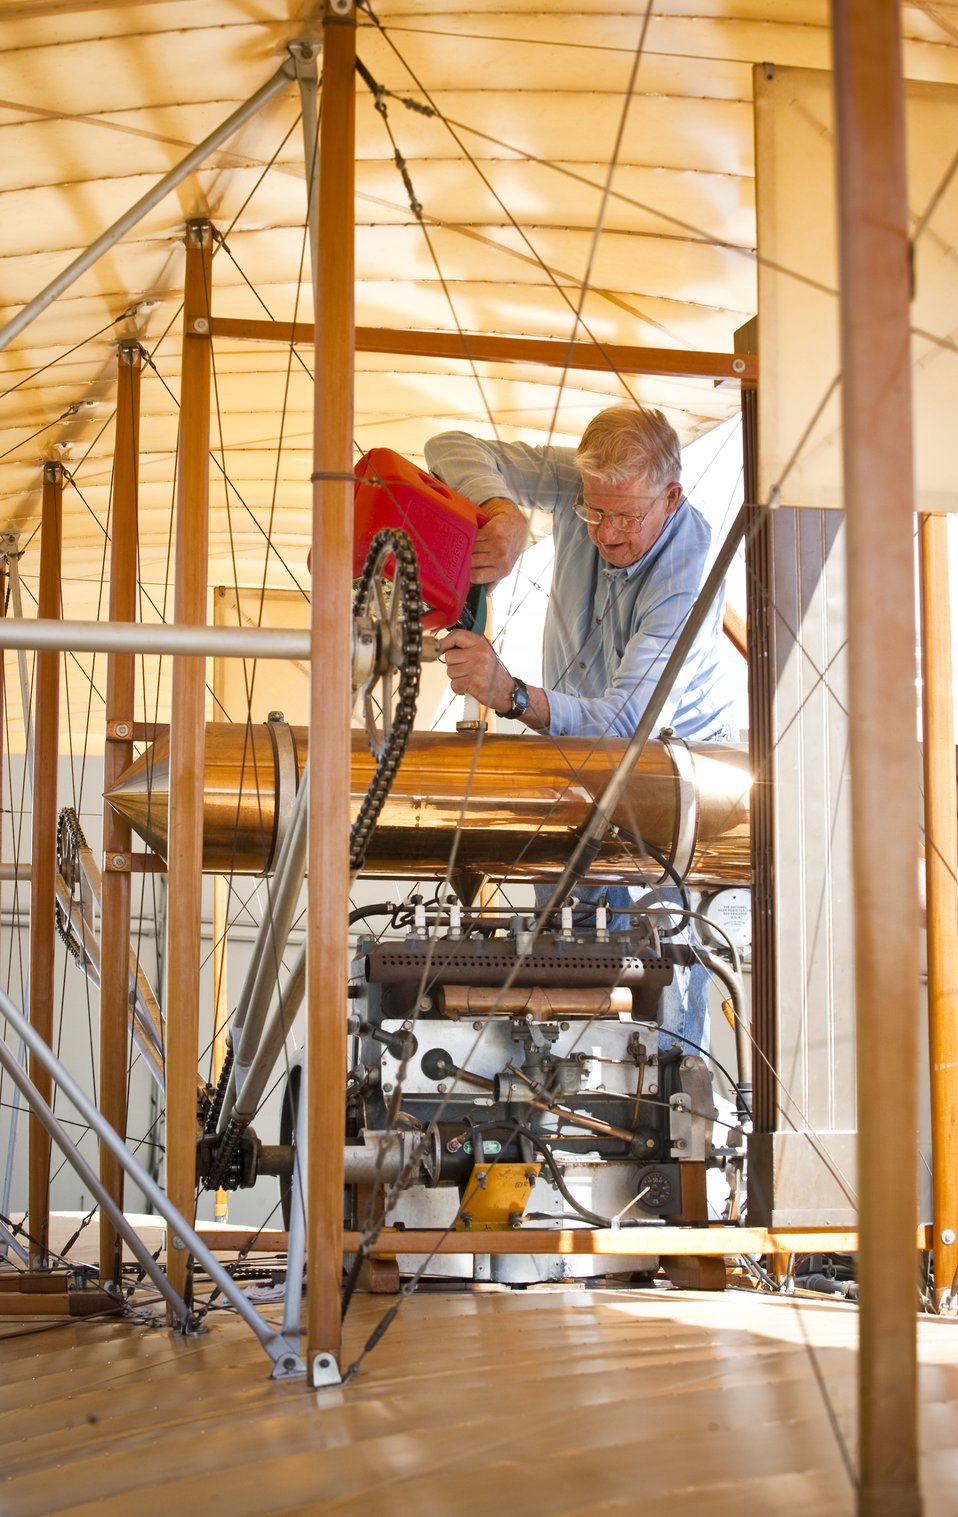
Wright